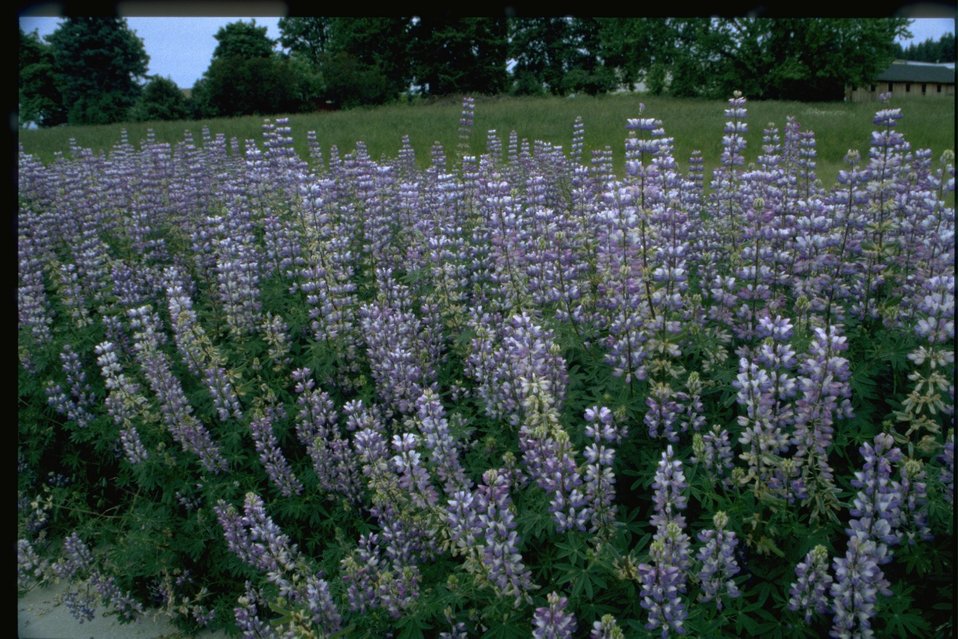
Medium shot of lupine wildflowers (Lupinus arcticus).